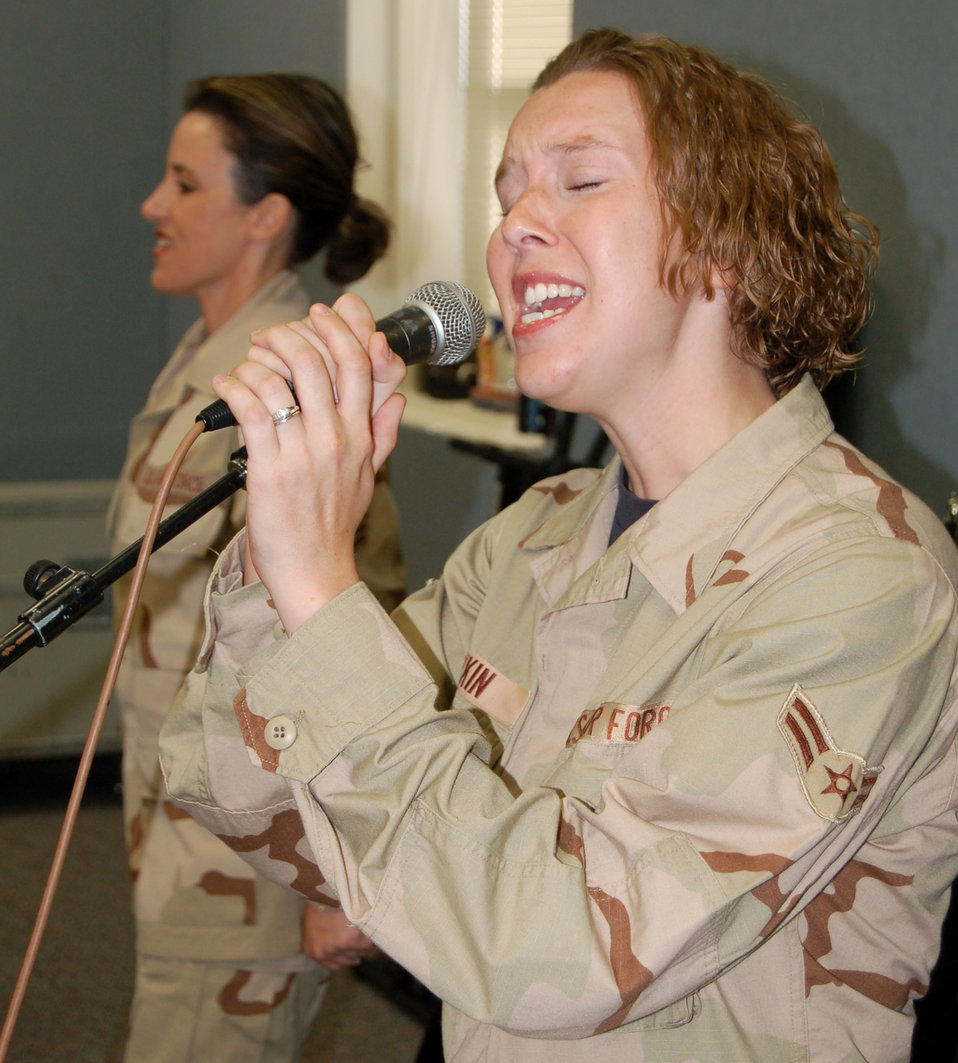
AF band targets forward bases for morale shows

Airman 1st Class Melissa Plotkin (front) sings with fellow vocalist Tech. Sgt. Donna Siler during a rehearsal Oct. 4. Both are with the Air Force Band of the West's Top Flight rock band at Lackland Air Force Base, Texas. The band will be deploying soon to Southwest Asia.